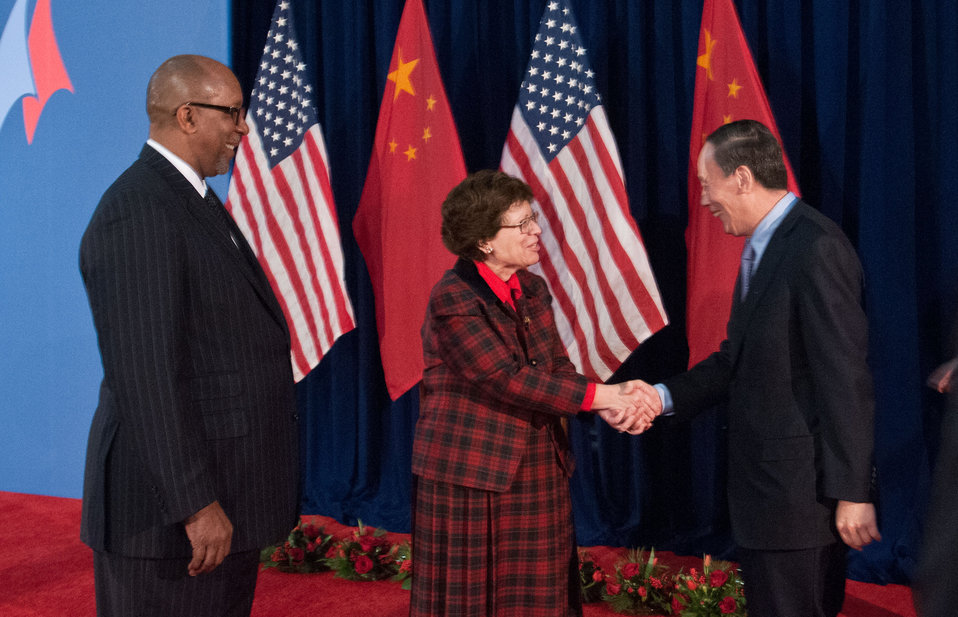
U.S. Trade Representative Ron Kirk and Acting U. S. Commerce Secretary Rebecca Blank representing the U.S. greet Chinese Vice Premier Wang Qishan to the 23rd Session of the U.S. China Joint Commission on Commerce and Trade (JCCT) at the Andrew W. Mellon Auditorium in Washington, D.C. on Wednesday, Dec, 19, 2012. The JCCT holds high-level plenary meetings on an annual basis to review progress made by working groups that focus on a wide variety of trade issues. These working groups meet throughout the year to address topics such as intellectual property rights, agriculture, pharmaceuticals and medical devices, information technology, tourism, commercial law, environment, and statistics.